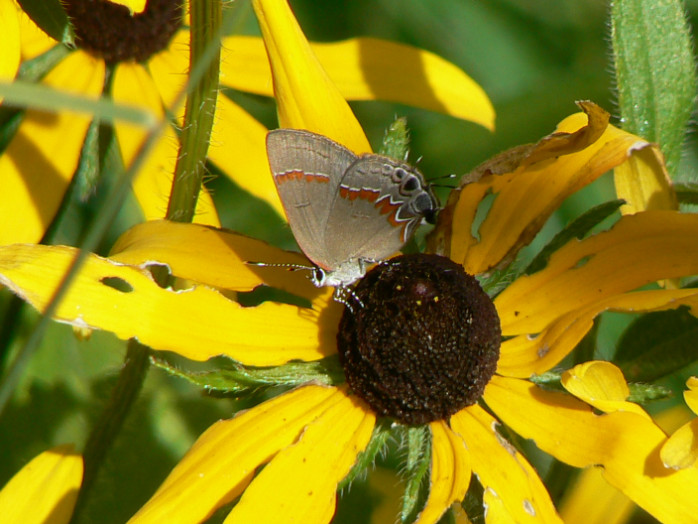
red-banded hairstreak butterfly on coneflower

Cape May National Wildlife Refuge, NJ